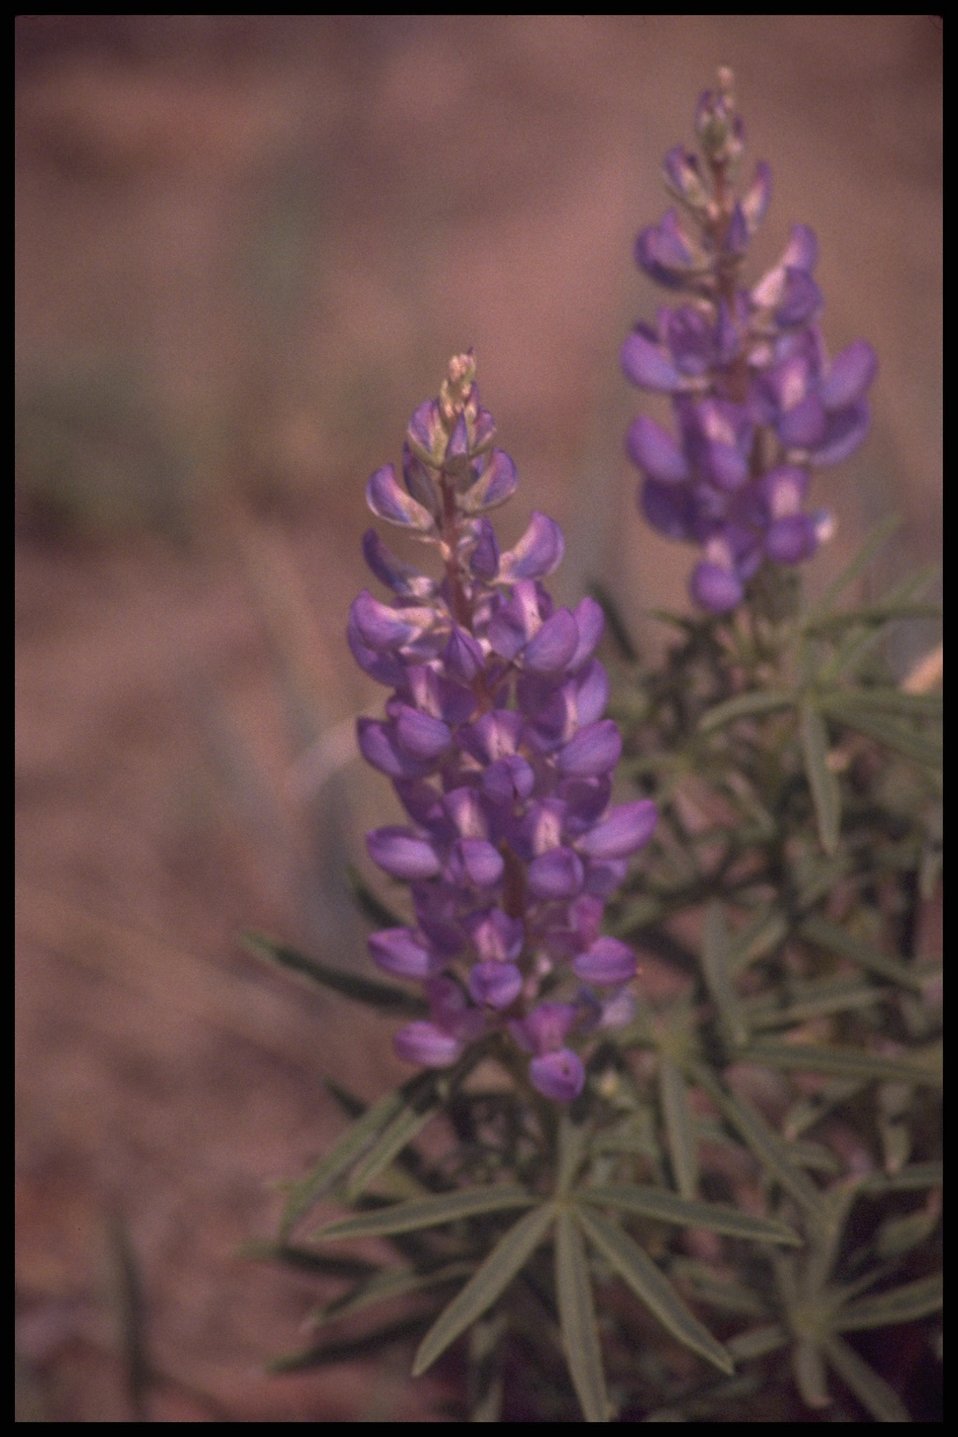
Close shot of Lupine wildflowers, Lakeview District.